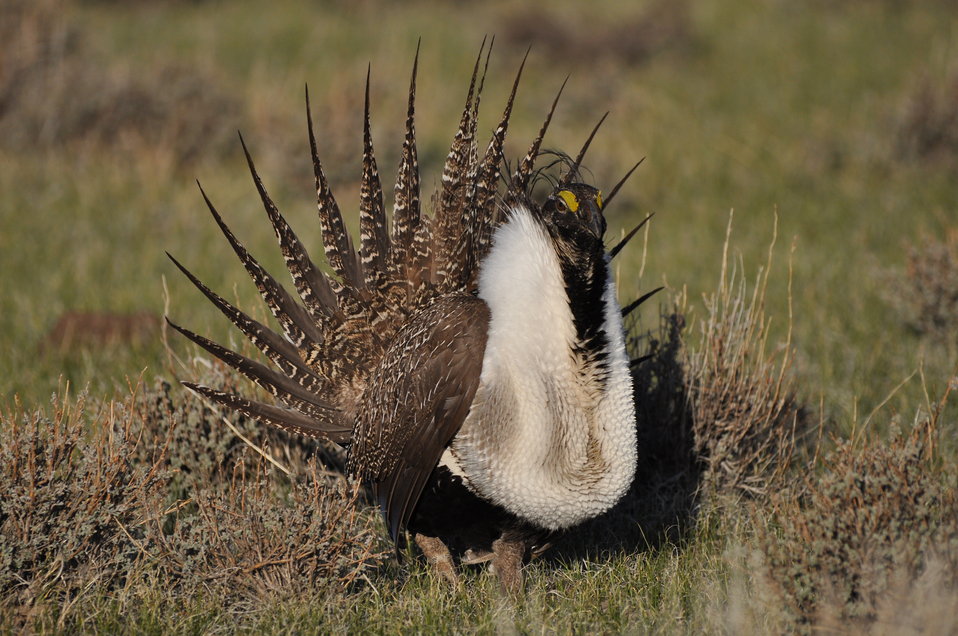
Greater Sage-Grouse

Photo Credit: Jeannie Stafford/USFWS
A greater sage-grouse male struts at a lek (dancing or mating ground) near Bridgeport, CA to attract a mate.